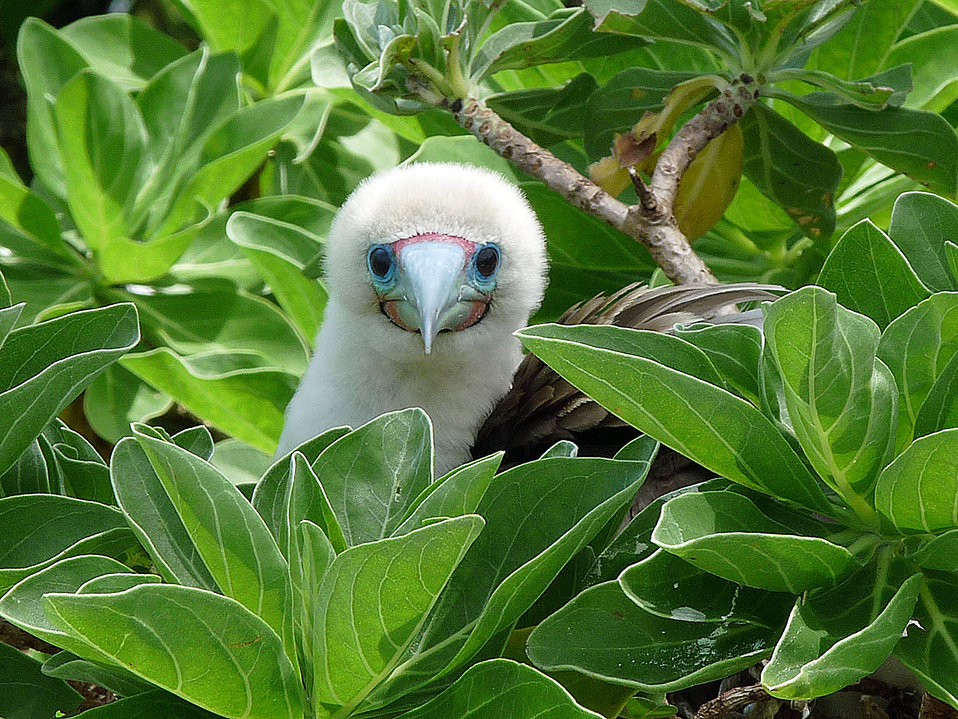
Booby bird nestled in the bushes